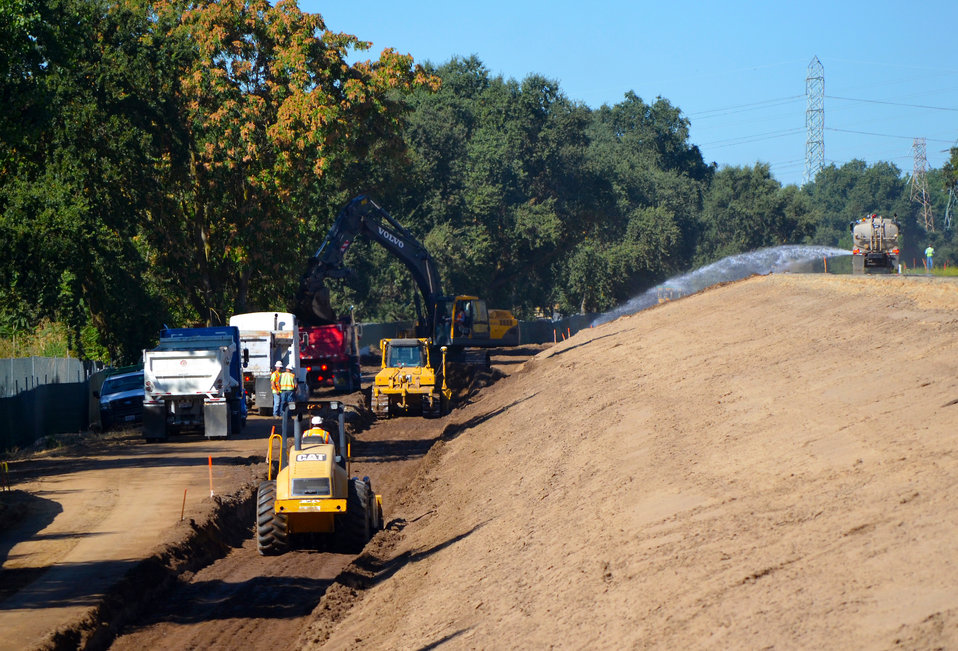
Howe Avenue levee raise project continues Aug. 28, 2012

Contractors for the U.S. Army Corps of Engineers Sacramento District excavate levee material Aug. 28, 2012, as part of the Howe Avenue levee raise project along the American River in Sacramento, Calif. Much of the material being excavated from the trench is stockpiled for reuse, and is cleared of debris and tested for proper compaction levels prior to being used on the new levee. The project will further reduce flood risk by raising and reinforcing more than 4,000 feet of levee along the American River in Sacramento, Calif.